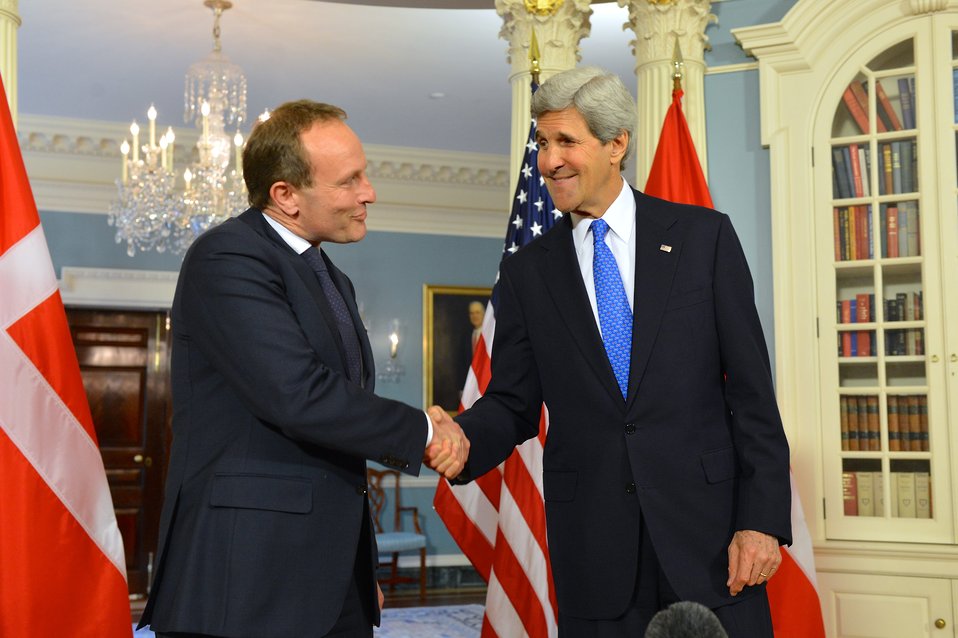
Secretary Kerry Shakes Hands With Danish Foreign Minister Lidegaard

U.S. Secretary of State John Kerry shakes hands with Danish Foreign Minister Martin Lidegaard after they addressed reporters at the U.S. Department of State in Washington, D.C., on May 9, 2014.